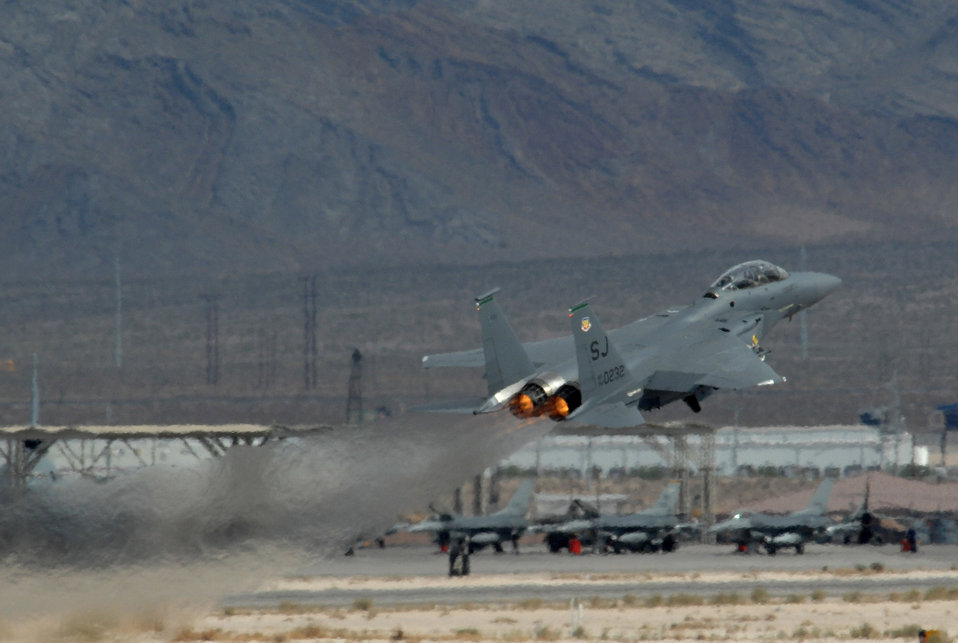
Green Flag launches Strike Eagles into the air

An F-15E Strike Eagle, takes off during Exercise Green Flag April 24 at Nellis Air Force Base, Nev. Green Flag is an Air Combat Command pre-deployment exercise for units who perform close-air support. The training exercise, which began April 19 and runs through May 4, mirrors many of the irregular warfare-conditions the aircrews will see while fighting the war on terrorism. During Green Flag, aircrews will try to learn better ways to employ airpower within an irregular warfare environment. The F-15E is from Seymor Johnson AFB, N.C.